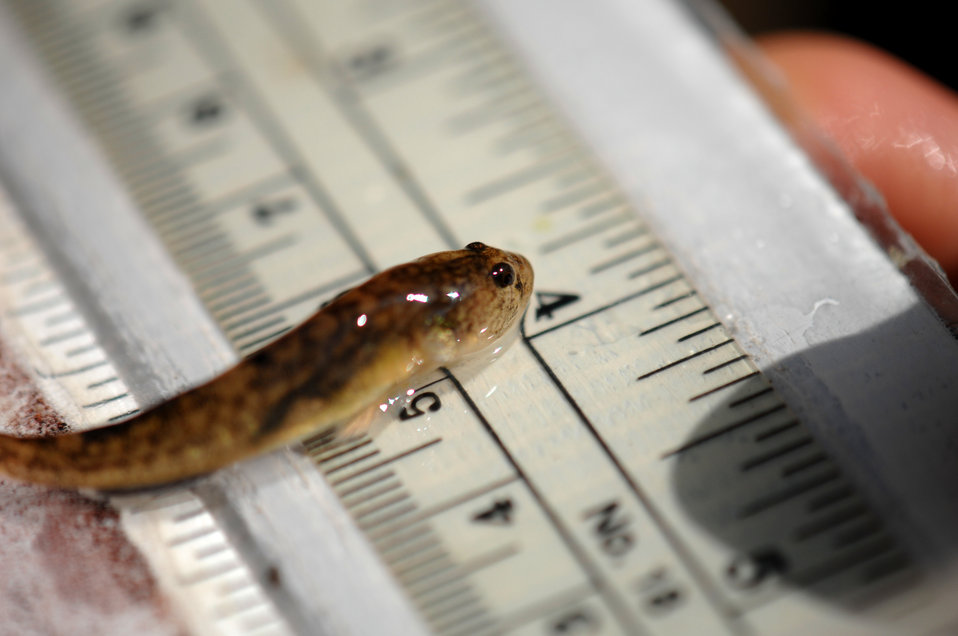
Tidewater Goby 3

Prior to the lagoon breach, the U.S. Fish and Wildlife Service went out to survey for the endangered tidewater goby.